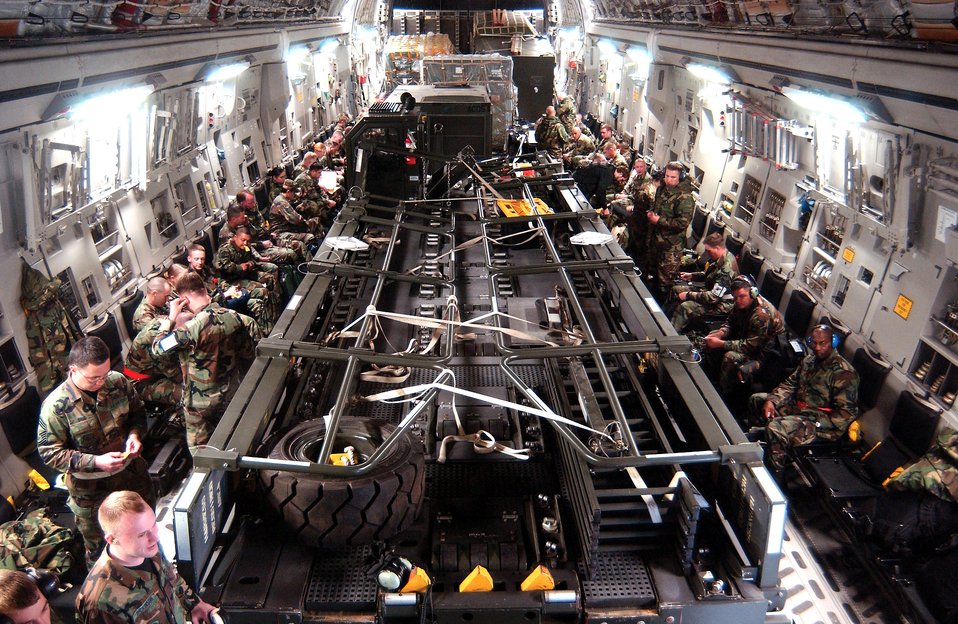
Thunderbolt in Michigan

Airmen from McChord Air Force Base, Wash., sit on a C-17 Globemaster III waiting to